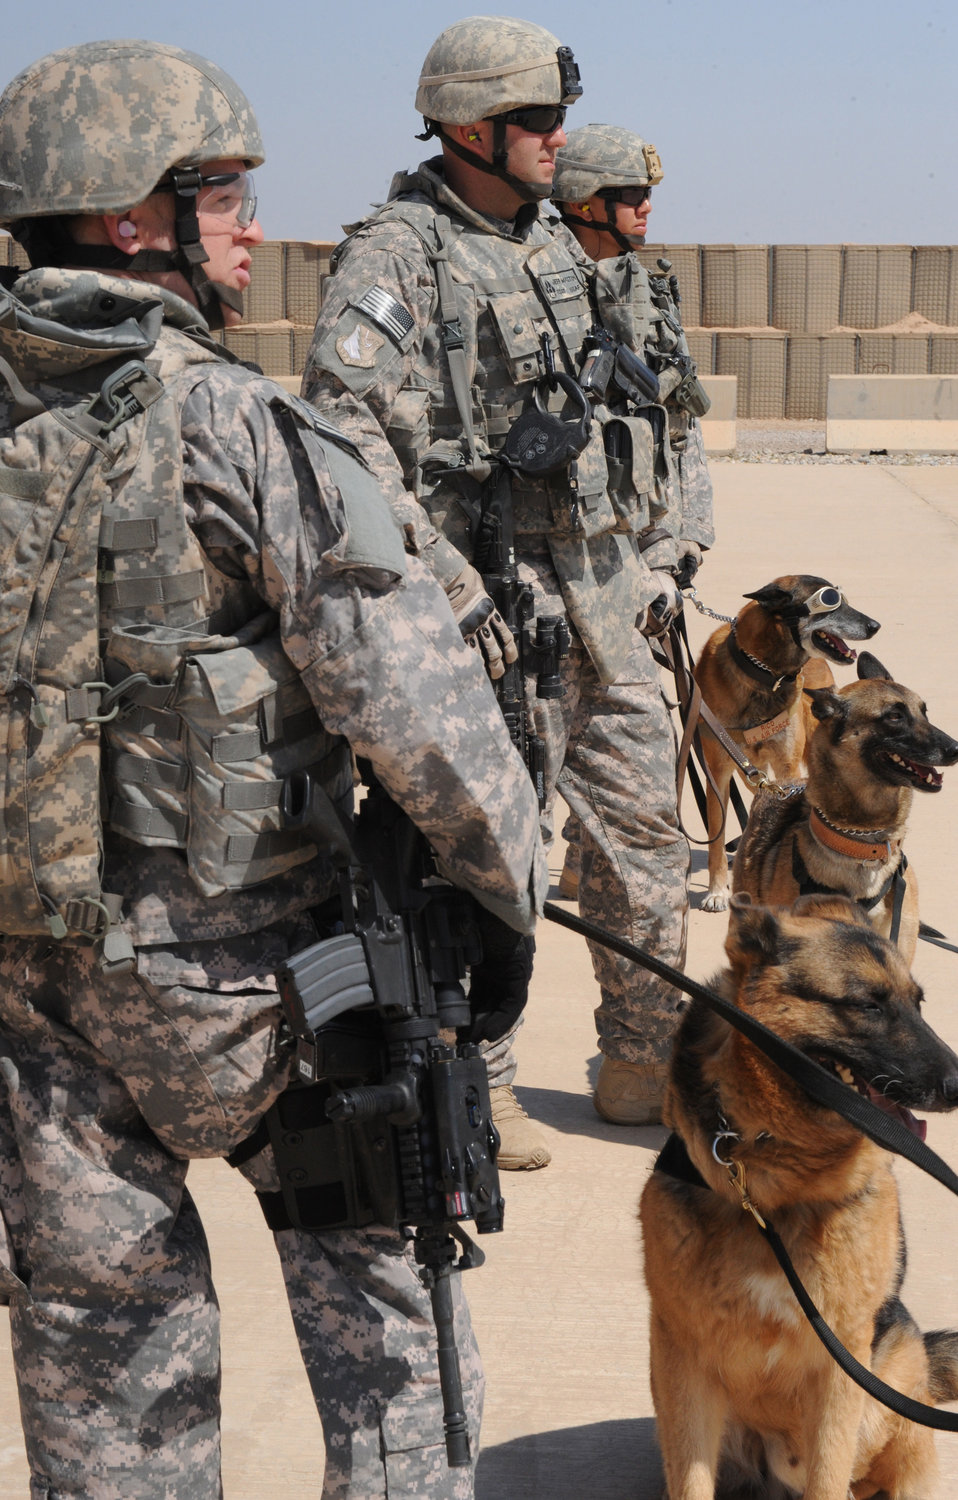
Man's best friend

Military working dog handlers and military working dogs with the 332nd Security Forces Group wait for instructions to return to the aircraft from a helicopter crew chief during training April 21 at Joint Base Balad, Iraq. The training teaches the handlers and military working dogs how to safely and properly enter and exit aircraft, and prepares them for future air-assault missions.